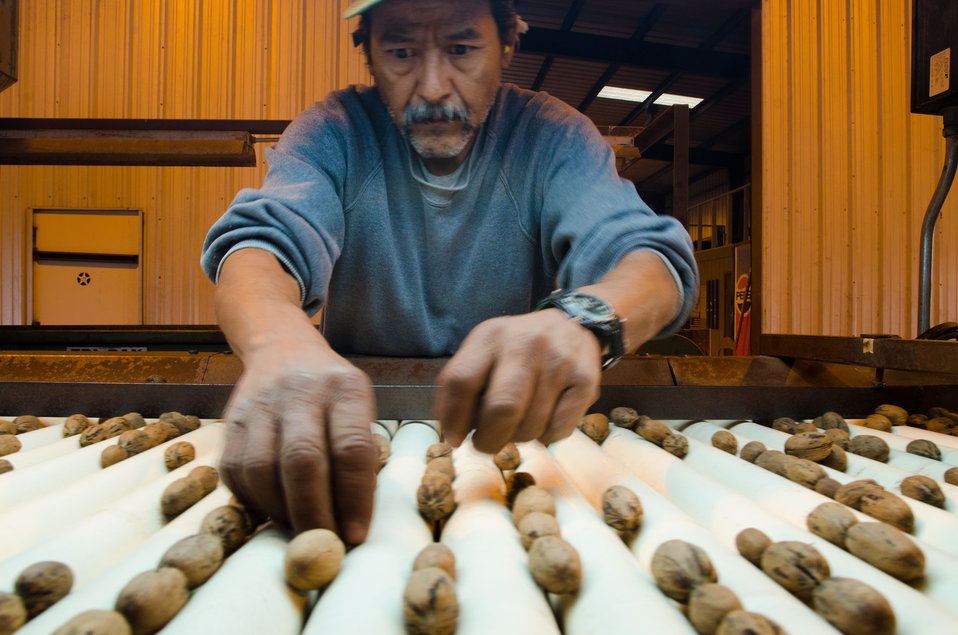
Jesus Gomez uses keen eyes and fast hands to sort out any pecans that are less than perfect from the last load of this season's harvest at Arrowhead Farms of Crystal City, TX, on Friday, December 9, 2011, owned by Mr. Akram Mohammad, a pecan farmer since 2005. The 719 acre farm with 10,000 trees, features some orchards with underground micro irrigation system that feeds water to the roots of 4,380 pecan trees on 146 acres. Mr. Mohammad said, “USDA (U.S. Department of Agriculture) was essential to my business and trees surviving the recent exceptional drought. The trees were stress free thanks to underground micro-irrigation. This is essential to the future growth of Texas agriculture and good for America.” U.S. Department of Agriculture’s (USDA) Environmental Quality Initiative Program (EQIP) awarded Mr. Mohammad a $130,000 grant in 2008. He provided $26,000 for the balance of the $156,000 total cost to install a 146-acre underground micro-irrigation for 4,380 trees.